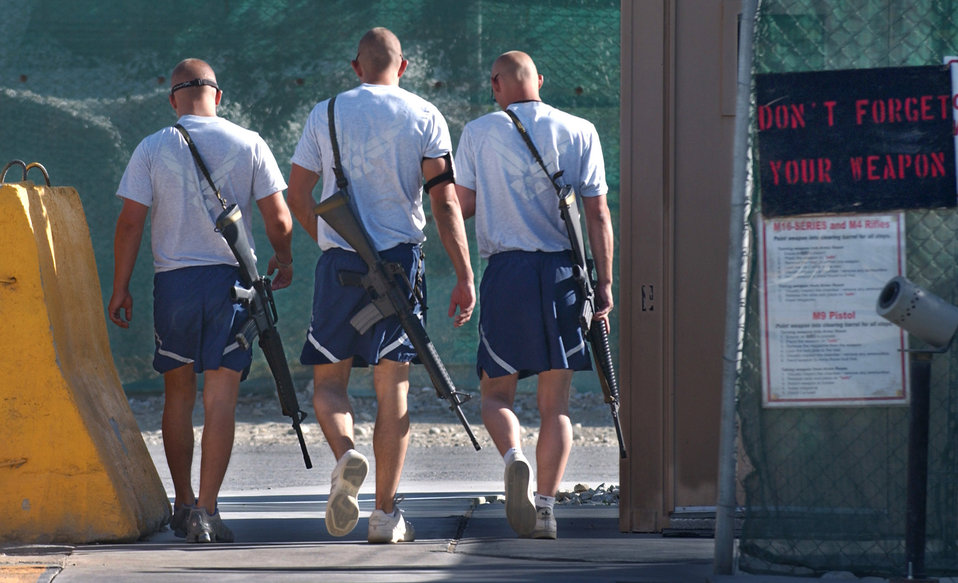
Don't forget your weapon

Airmen wearing physical training gear and their weapons make their way across Camp Cunningham June 17 at Bagram Airfield, Afghanistan.